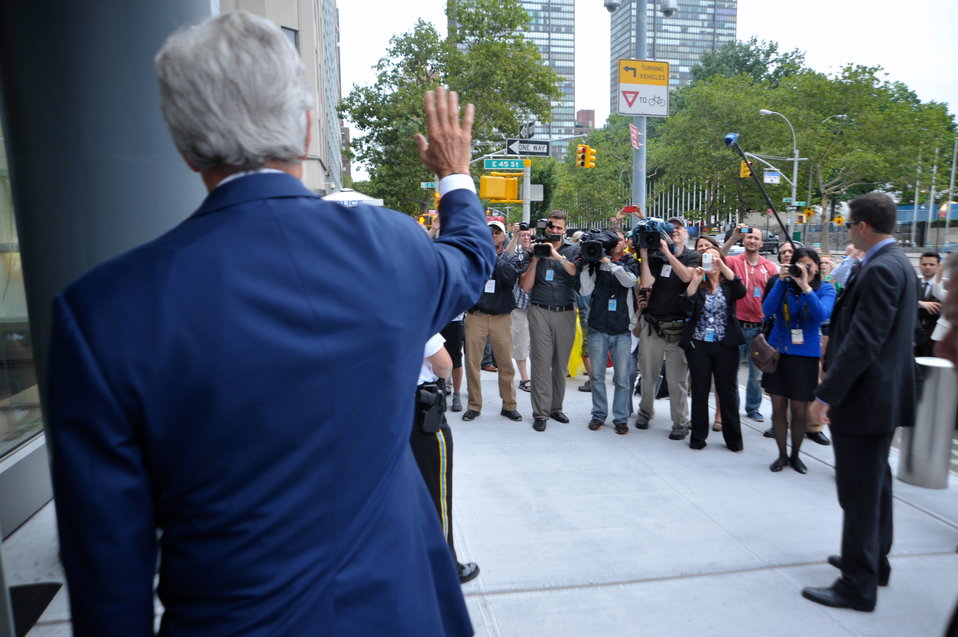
Secretary Kerry Waves to Reporters

U.S. Secretary of State John Kerry waves to members of the media before meeting with the Syrian Opposition Council after visiting the United Nations in New York City on July 25, 2013.